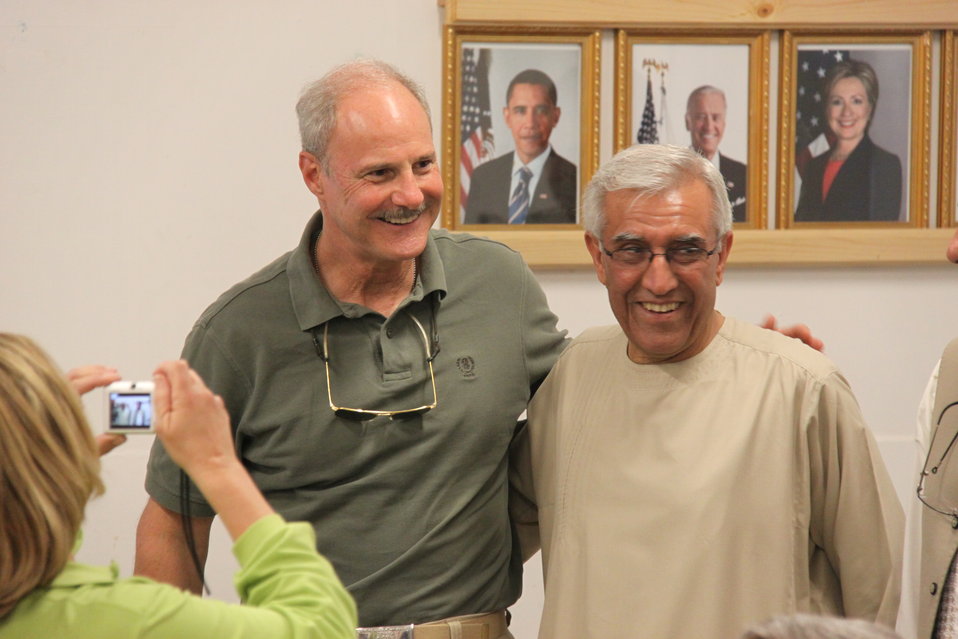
Meeting with Local Leaders in Kandahar